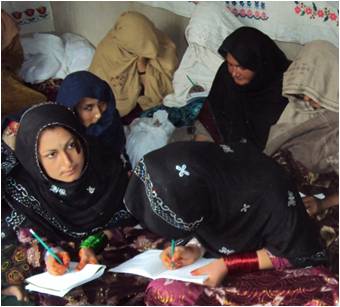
One Woman Makes a Difference

Twenty-four-year-old Wahida received a good education when she was living as a refugee in Peshawar, Pakistan. However, when she returned to her village in Afghanistan, she was surprised by new obstacles and few opportunities. Because of poverty, her brother was forced to quit school and work to support the family. Wahida wanted to help by becoming a teacher at a nearby high school for girls, but her brother objected. “I don’t want you to go out of the house,” he said. “Don’t you know that the girls of this village only perform household chores and nothing else?”
Her opportunity was realized when the village malik (elder) spoke to her about USAID’s Support to Women in Skills, Entrepreneurship, and Literacy project. Knowing that Wahida was well-educated, he wanted her to get involved and help establish a literacy center in the village.
The Support to Women in Skills, Entrepreneurship and Literacy project works to improve the economic condition of 630 vulnerable women and girls in eastern Afghanistan. Training workshops improve women’s skills in tailoring, embroidery, carpet weaving, food processing, and weaving so that they can produce quality goods and sell them to earn an income. In addition, women like Wahida teach literacy classes in 25 centers throughout eastern Afghanistan with the cooperation of the Educational and Training Center for Women and Girls.
The elder succeeded in convincing her brother that the opportunity was safe and would benefit Wahida and other women. “People of our village do not understand that women and men have an equal right to study. It is the responsibility of people like you and me to take initiative and make girls’ education available and eliminate illiteracy,” he explained.
Wahida is currently working as a literacy teacher with 25 women enrolled in her class. In addition to teaching, she regularly stresses the importance of education for women and girls. Her students spread the same message to their family members. Young girls who used to spend their days doing chores are now attending school. Wahida found that one person can make a real difference in the lives of others.